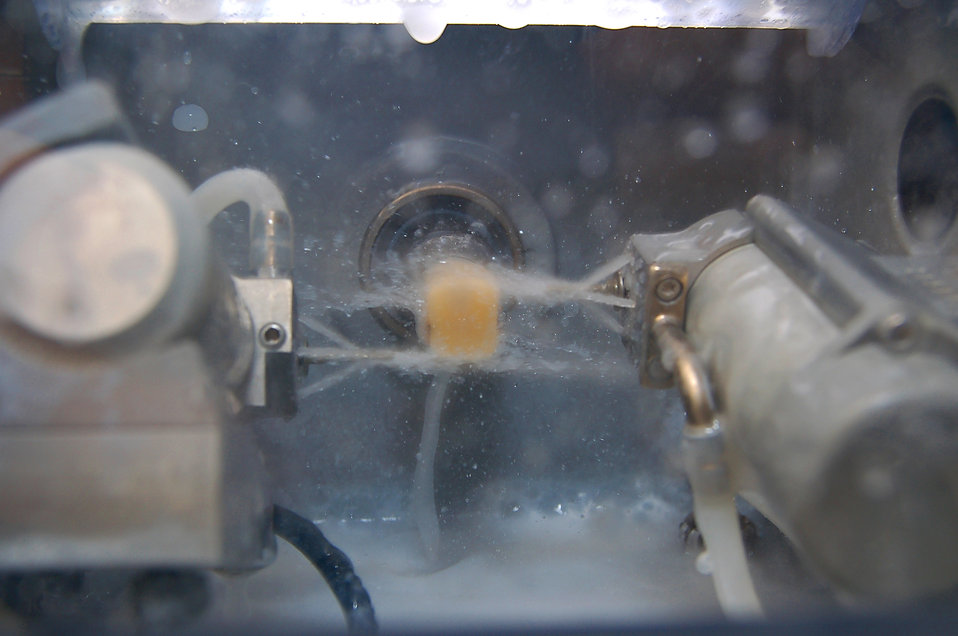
New technology takes pain out of major dentistry

A new precision milling machine uses two fine diamond-coated burrs to grind away at a ceramic block to create crowns, bridges or veneers Jan. 29 at the dental clinic on Moody Air Force Base, Ga. The $64,000 computerized milling system shortens the processing time of the dental work from six weeks to a couple of hours.